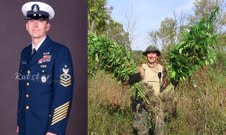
Jeff J. Lucas VET image

Federal Wildlife Officer Jeff Lucas joined the USFWS in 2004. Jeff is a Law Enforcement Specialist for the Division of Refuge Law Enforcement in Arlington, VA.

Senior Chief Petty Officer Jeff Lucas joined the US Coast Guard in 1987, and served 8 yrs on active duty before joining the Coast Guard reserves in 1995. His active duty assignments included the Cutter Basswood homeported in Guam, Station St Petersburg, FL, and Station Duluth, MN. Reserve assignments included Station Duluth, MN, Marine Safety Unit St. Paul, MN, and Sector Mobile, AL. He is a graduate of the National Motor Lifeboat School in Cape Disappointment, WA, the National Maritime Law Enforcement Academy, and the Chief Petty Officer Academy.

While in the reserves, Jeff has been deployed to the Red River floods in MN and ND, the I-35W bridge collapse in Minneapolis, MN, and most recently to the Deepwater Horizon oil spill response in Grand Isle, LA. SCPO Lucas currently serves as the Reserve Command Senior Chief for Sector Mobile, AL.